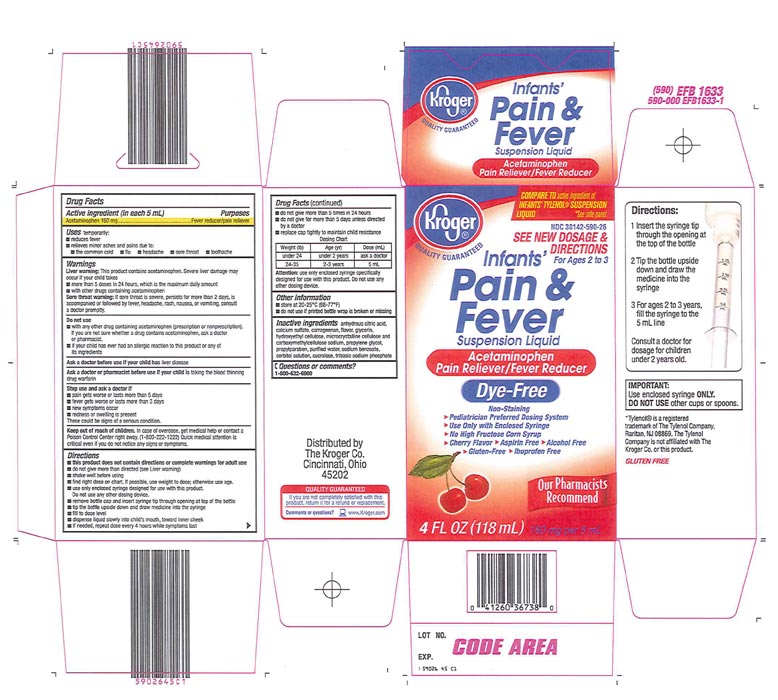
Recalled - Acetaminophen infant suspension liquid

November 1, 2013 – Product Recall – Perrigo Initiates Nationwide Voluntary Product Recall of Acetaminophen Infant Suspension Liquid, 160 Mg/5 Ml, Due to a Potential Defect with the Co-packaged Oral Syringe.